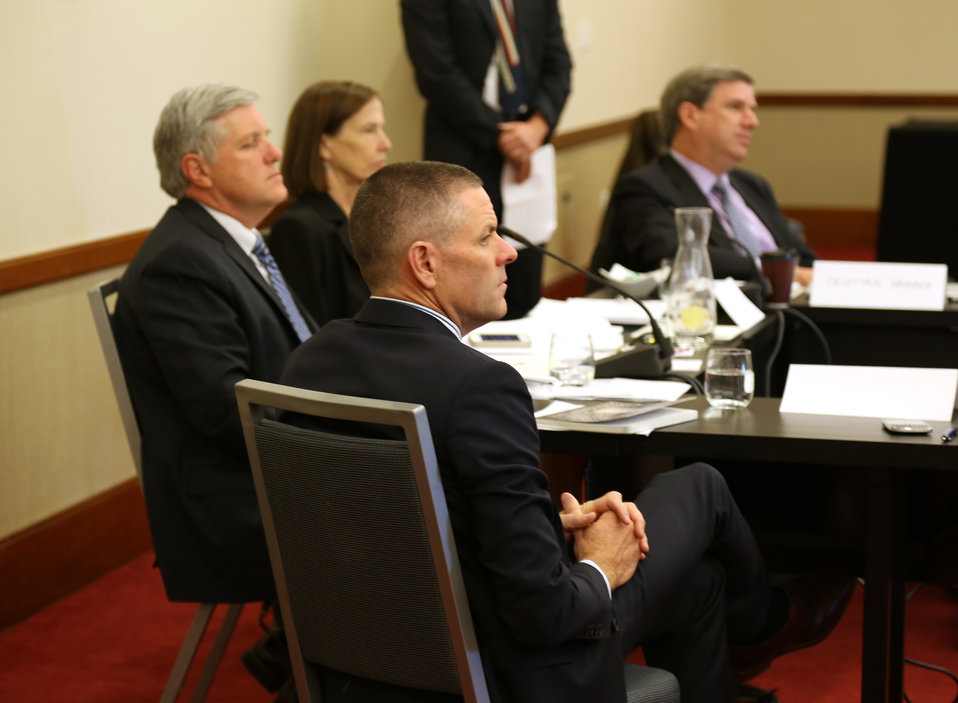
Wildlife Trafficking Advisory Council Meeting March 20, 2014